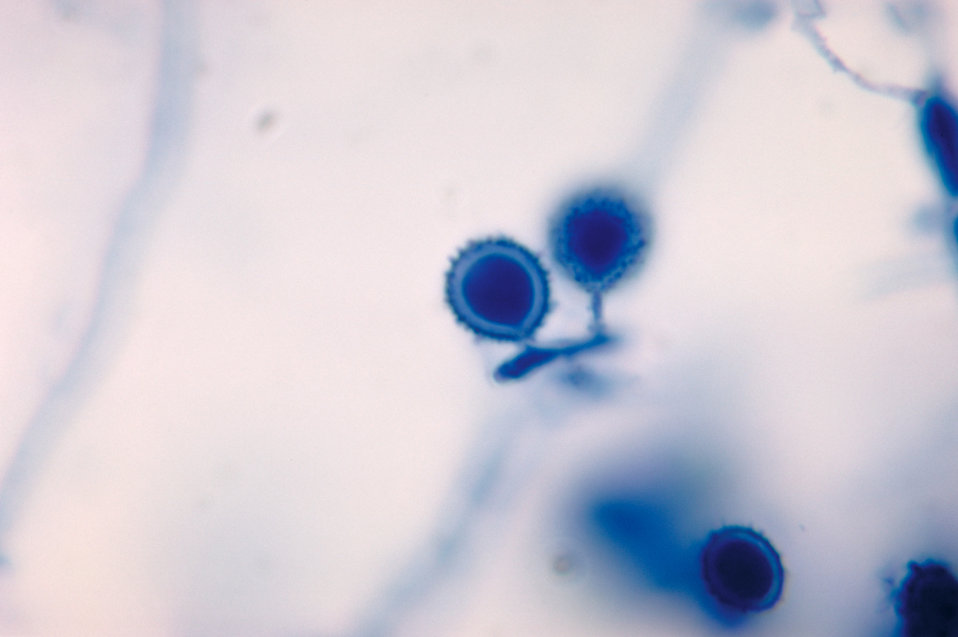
This is a highly magnified photomicrographic view of a number of Ctenomyces serratus conidia.